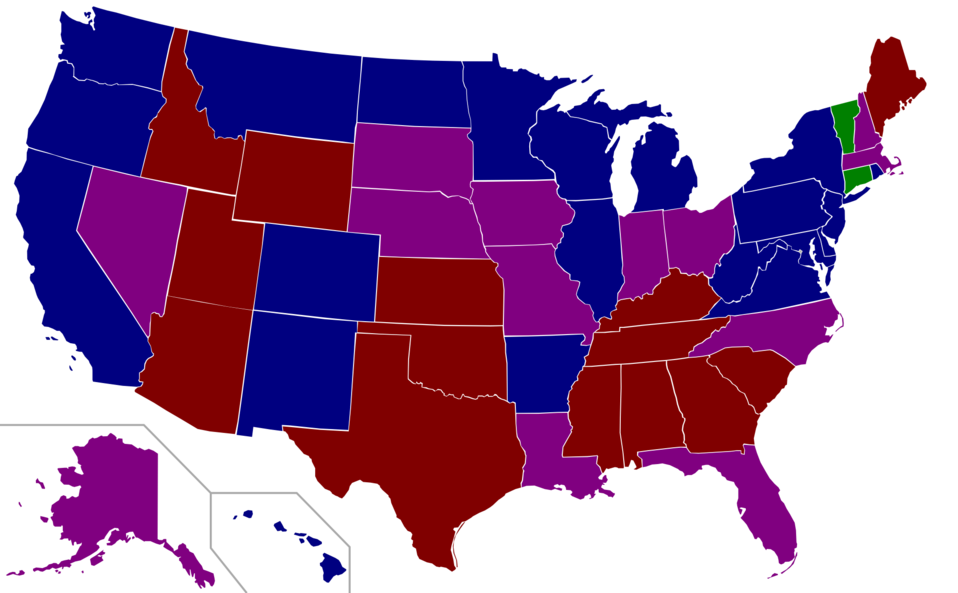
The 111th United States Senate. This map reflects the results of the 2008 United States Senate election, and also reflect Arlen Spencer switching to the Democratic Party.